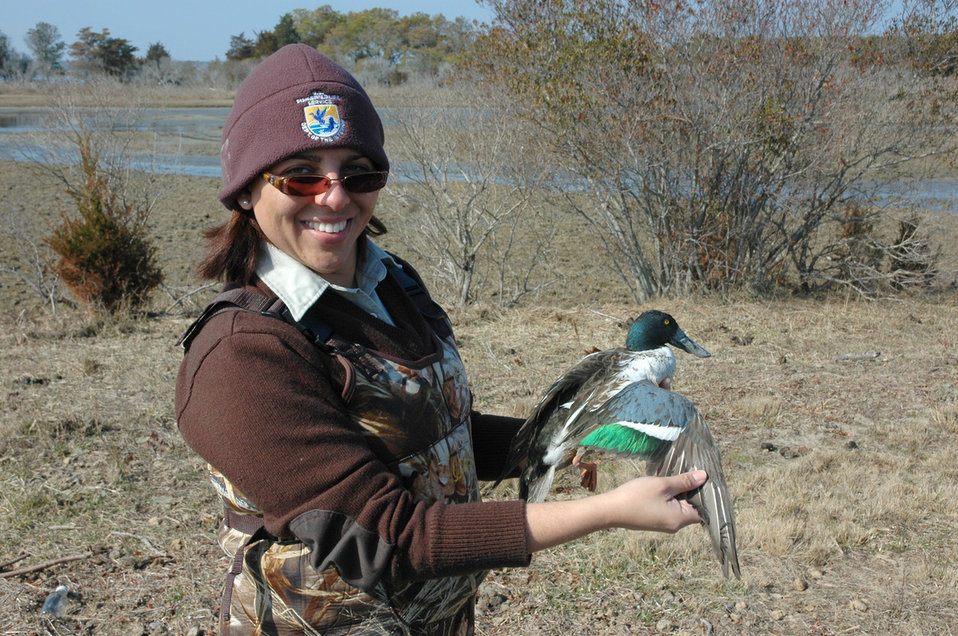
Biologist Banding a Northern Shoveler

Photographed at Chincoteague National Wildlife Refuge.